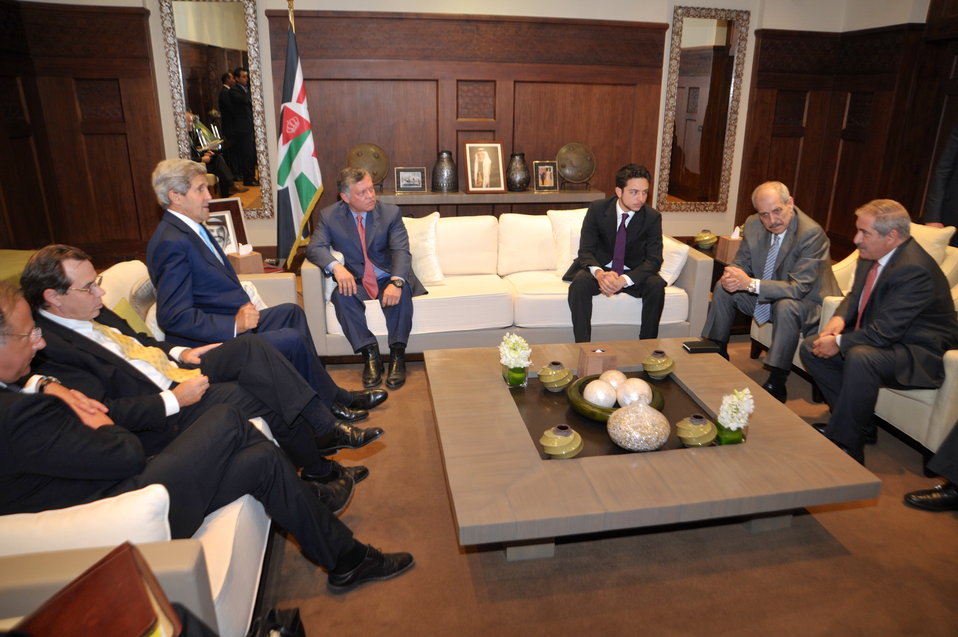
U.S. Delegation Meets with Jordanian Delegation

U.S. Secretary of State John Kerry and King Abdullah II of Jordan sit with their respective teams before a meeting at Al Hummar Palace in Amman, Jordan, on July 17, 2013.